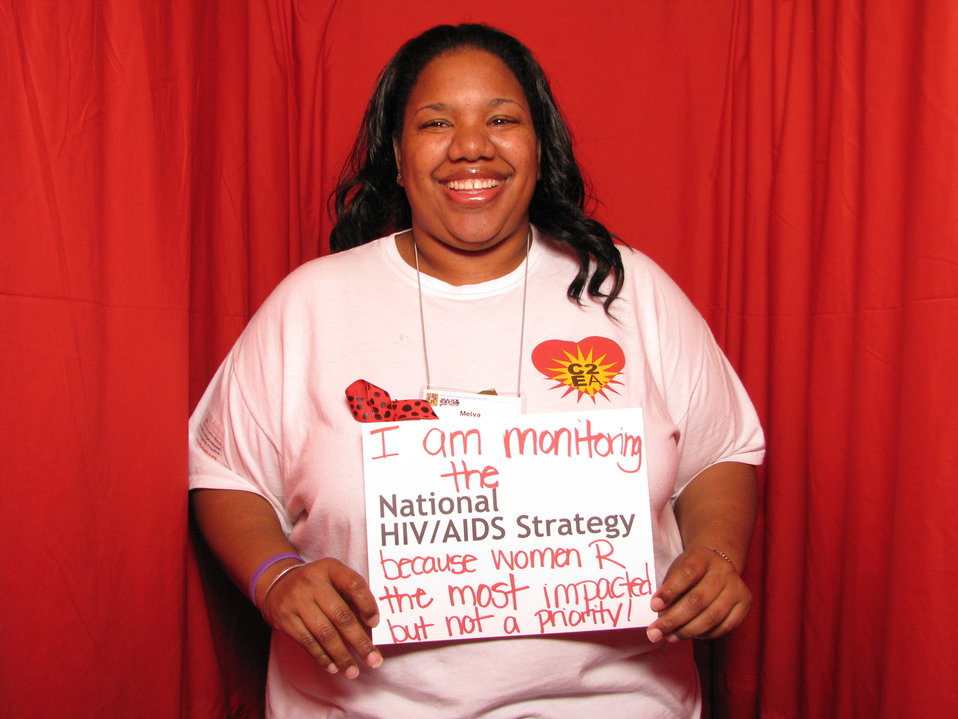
I am monitoring the National HIV/AIDS Strategy because women R the most impacted but not a priority!

From the AIDS.gov photo booth at the U.S. Conference on AIDS, September 2010 (Orlando, FL).